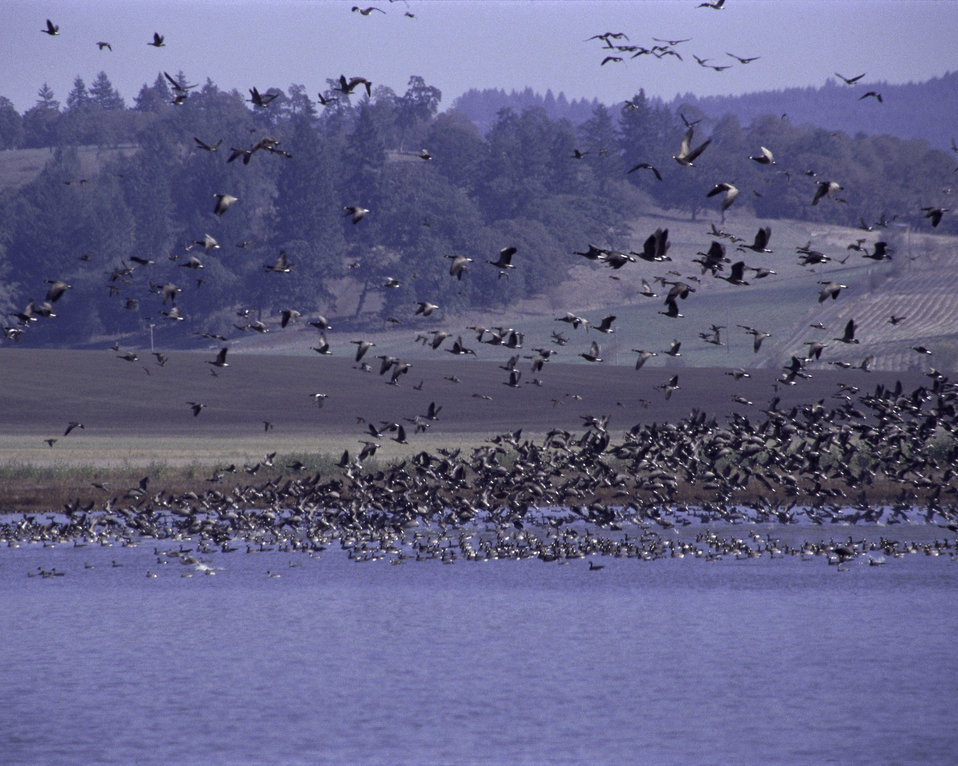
Ankeny National Wildlife Refuge, Oregon

Ankeny NWR, Dallas, Oregon: Ankeny National Wildlife Refuge is one of three northwest Oregon refuges set aside in the mid-1960s to protect the declining population of dusky Canada geese. The entire population of duskies winter here and at the other two re